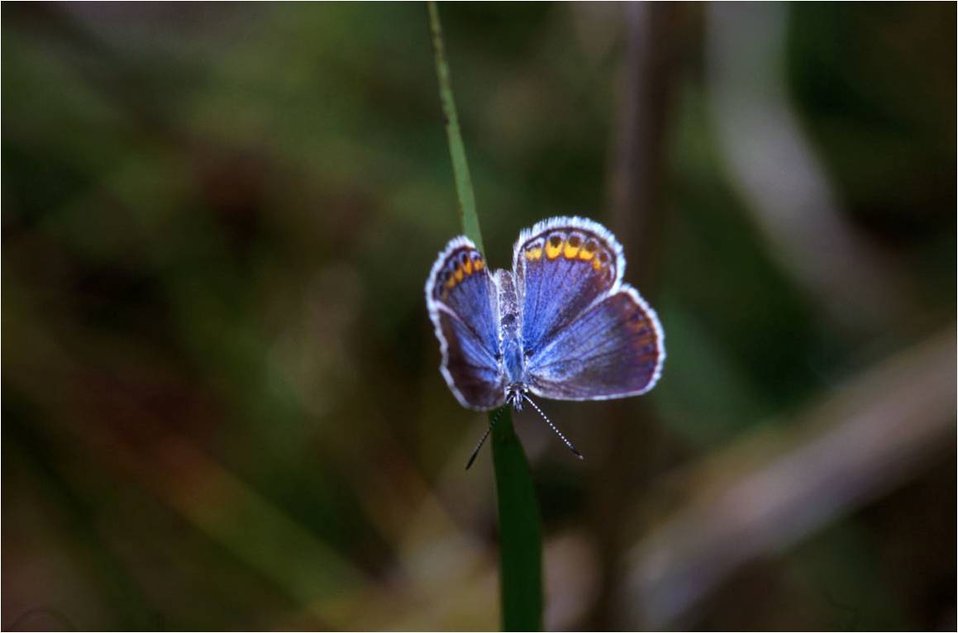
Karner Blue Butterfly